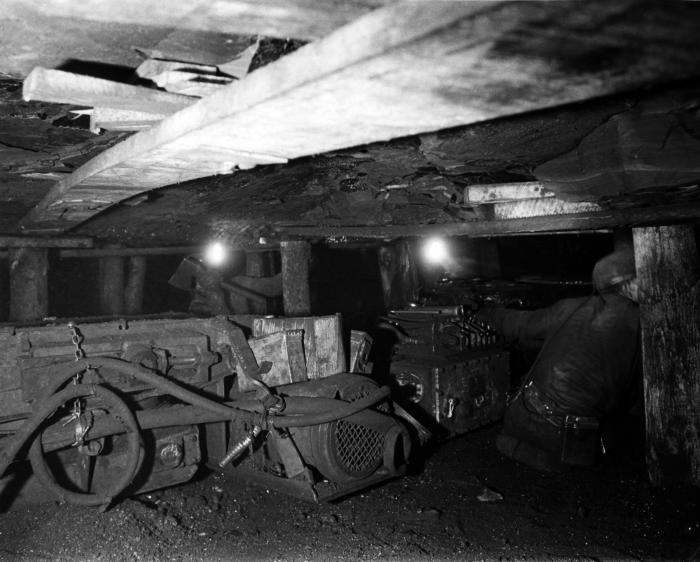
From the 1950s or 1960s, this historic image provided by the Center for Disease Control's (CDC), National Institute for Occupational Safety and Health (NIOSH), depicted two coal miners who were shown crouched down low in the small confines of a coal mine. Though not definitive due to the view, it appeared that the miner on the far right was not wearing what would now be considered as an appropriate filtered breathing device. Mining coal, especially under circumstances such as these close quarters, facilitated coal dust inhalation, thereby, predisposing miners to the long-term negative health effects of this profession such as 'black lung disease', or 'coal-workers' pneumoconiosis' (CWP). Today, the Federal government's stringent regulations on the level of coal dust permissible in the air of a coal mine, and the requisite use of filtered breathing devices, has dramatically lowered the number of cases of black lung disease. See PHIL 9540 for another view of this scene.